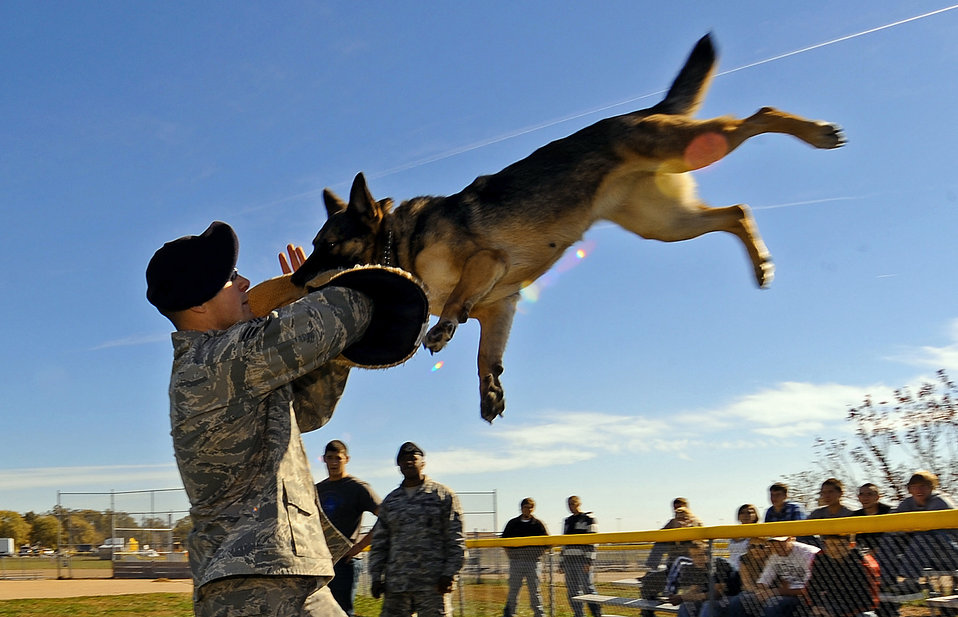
Up you go

Senior Airman Steve Hanks hoists Ada up in the air after she clamped down on the bite sleeve as part of a working dog demonstration Oct. 20, 2010, at Offutt Air Force Base, Neb. The demonstration was part of a base tour for high school and college students ready to enlist in the Air Force. Airman Hanks is a military working dog handler with the 55th Security Forces Squadron.